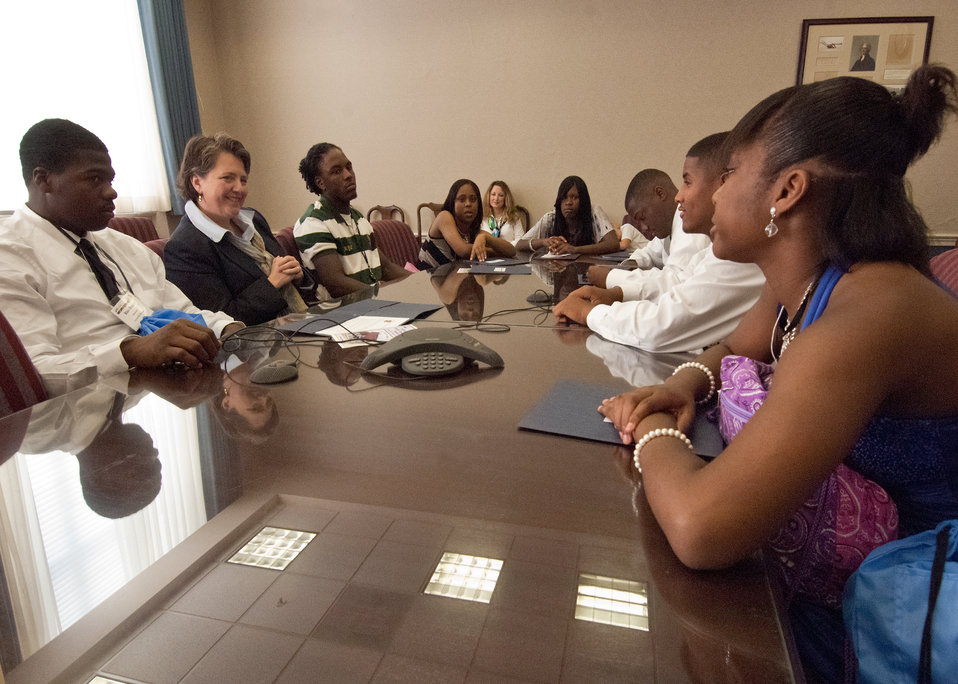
While on a Career Opportunity, seniors from Calvert High School Calvert, Texas tour the television studio United States Department of Agriculture (USDA) as part of a senior trip sponsored by the Farm Service Agency “Ag in the Classroom” program Monday, May 23, 2011, in Washington, DC. Agriculture Deputy Secretary Kathleen Merrigan listens to and answers questions from seniors from Calvert High School Calvert, Texas Jamarion Ramirez, Andre Ross, Telisa Grimes, LaKendra Crowley Ja’Marcus Ashley, Blair Burns and Shameka Grimes.